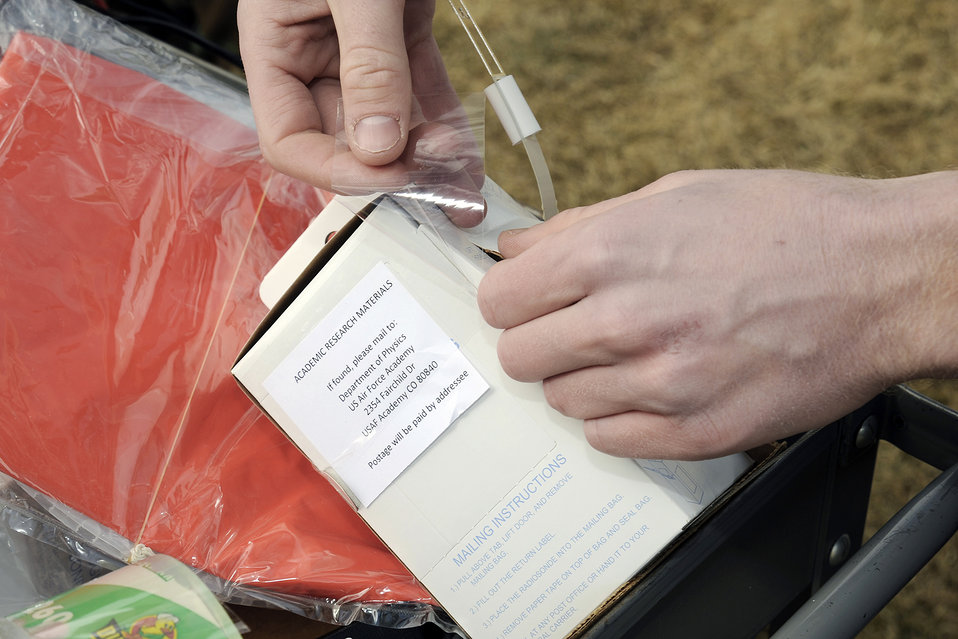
U.S. Air Force Academy, Colo-- A radiosonde is activated and prepared for launch as cadets prepare to launch a weather balloon to study the atmosphere. The balloon was tracked to an altitude of 30,000 feet, giving a vertical profile of temperature, humidity and pressure of the atmosphere before it's signal was lost over eastern Colorado. The balloon most likely popped around an altitude of 65,000 feet and then floated down harmlessly under parachute to the ground.